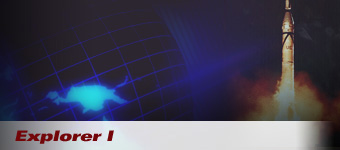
Explorer I launch

Explorer I is the first U.S. satellite to go into orbit. It was launched Jan. 31, 1958, by a Jupiter C rocket from Cape Canaveral, Fla.